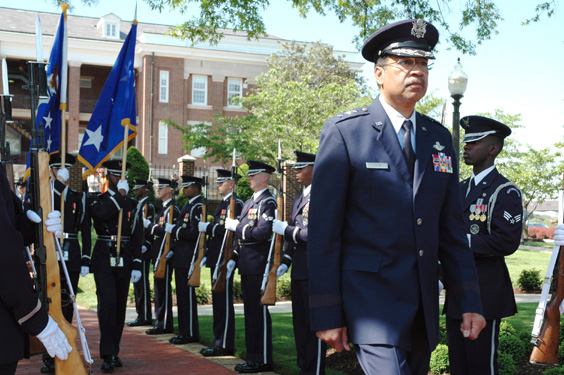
Daniel James III

Gen. Daniel James III at his retirement ceremony